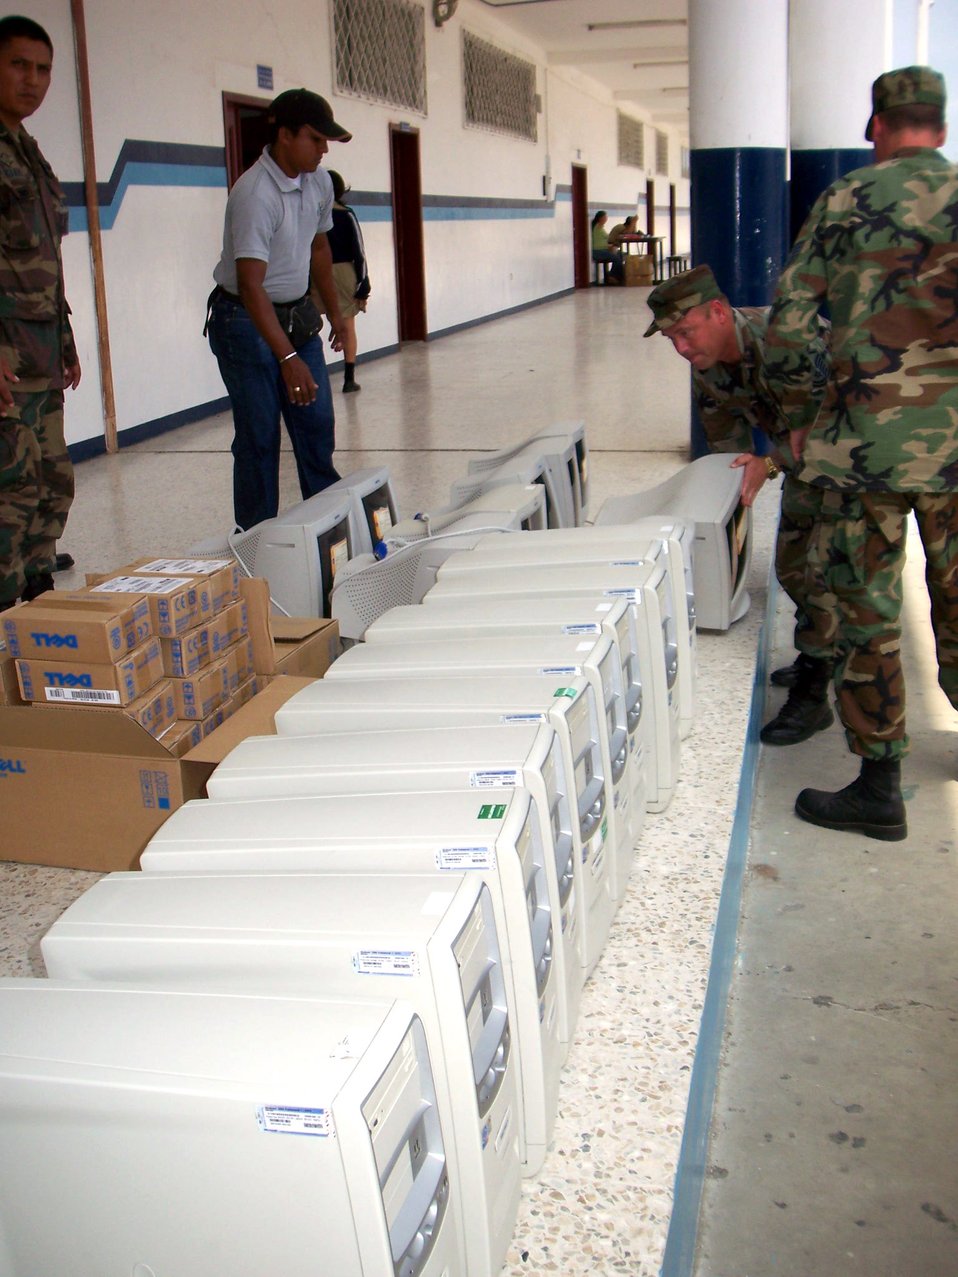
Airmen in Ecuador have a ball serving local community

Volunteers from the 478th Expeditionary Operations Squadron unload computers for a high school in Ecuador. Airmen from Manta Forward Operation Location donated 10 computers, soccer balls and 3,000 pounds worth of textbooks to the school.